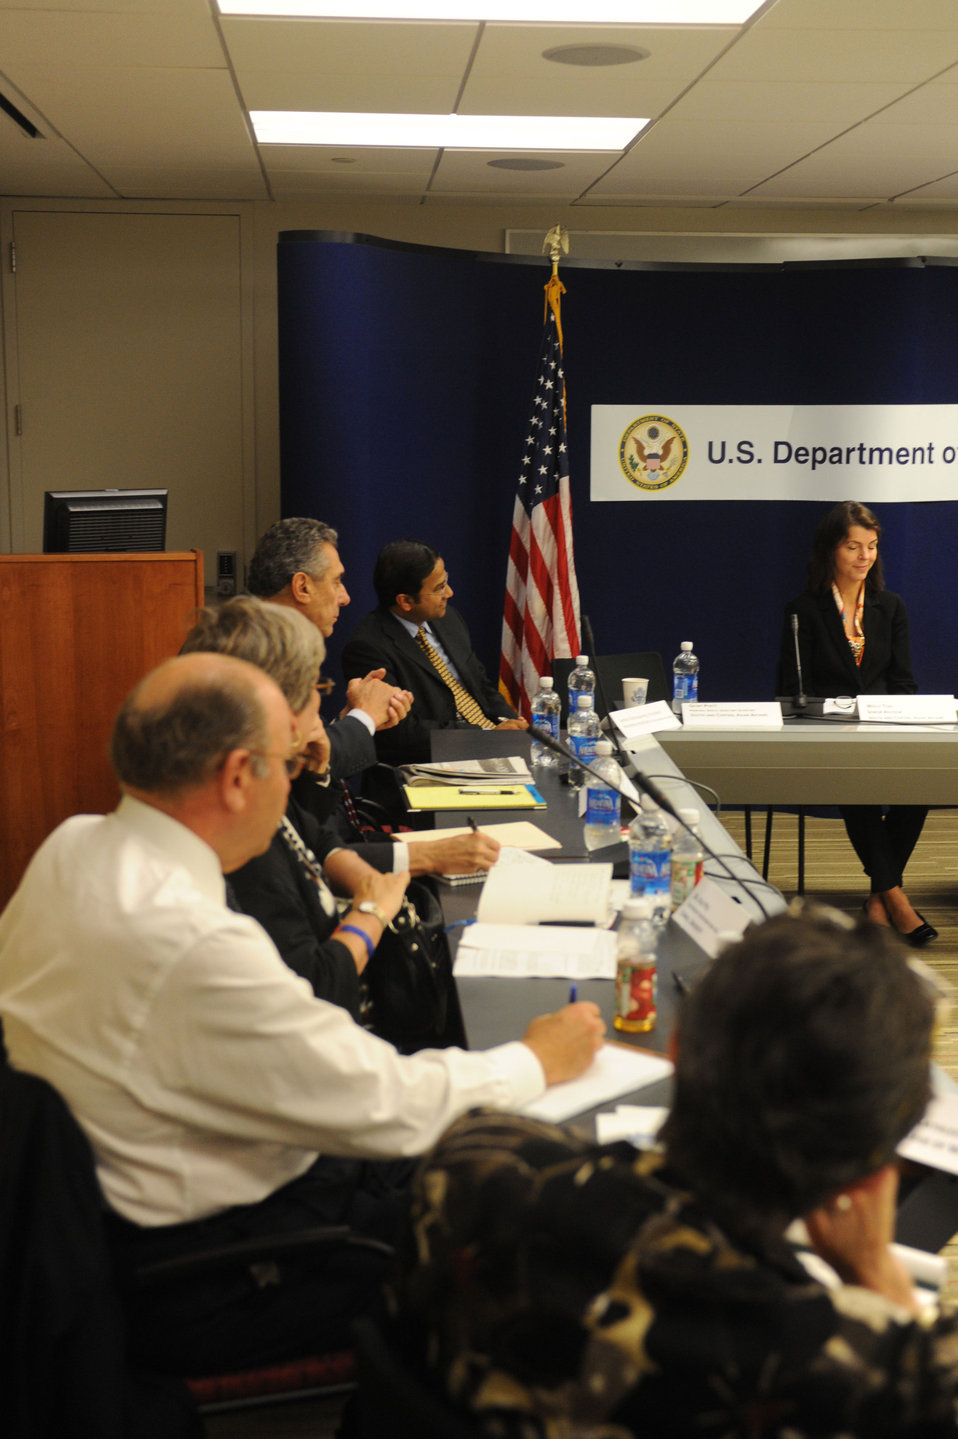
Participants contribute to the discussion at the Higher Education Roundtable chaired by Assistant Secretary of State for South and Central Asian Affairs Robert O. Blake (second from left) and Senior Advisor for Education Dr. Molly Maguire Teas in Washington, D.C., on September 16, 2010.